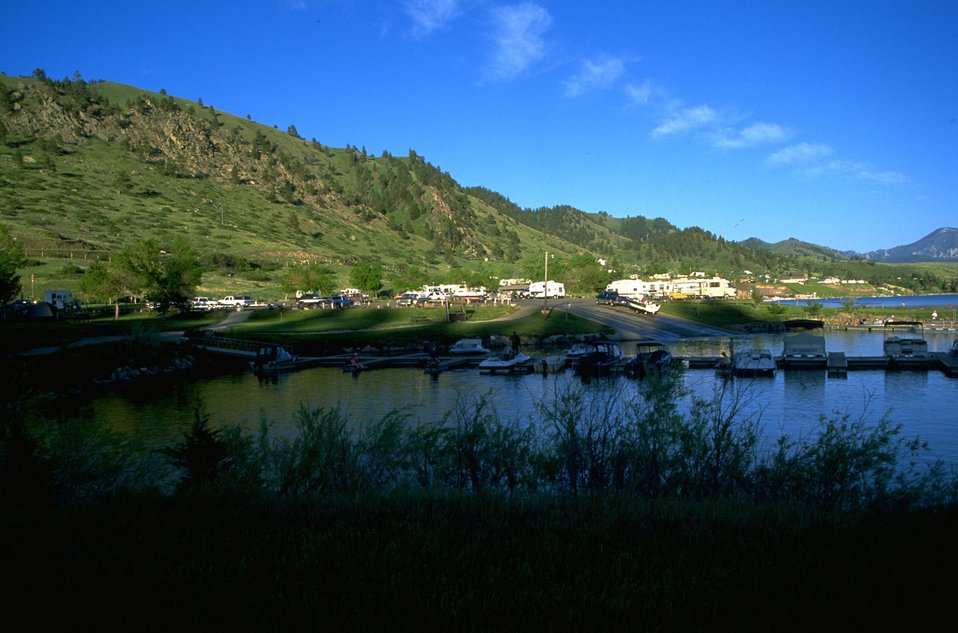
Campground and marina in the late afternoon light